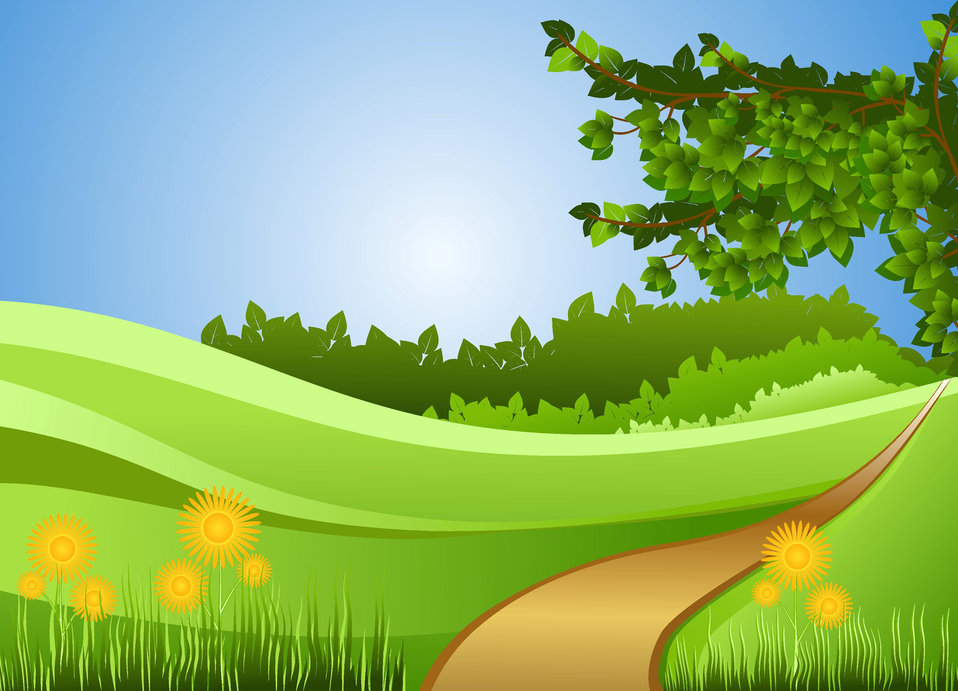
Green fields

Road in a field, summer illustration.